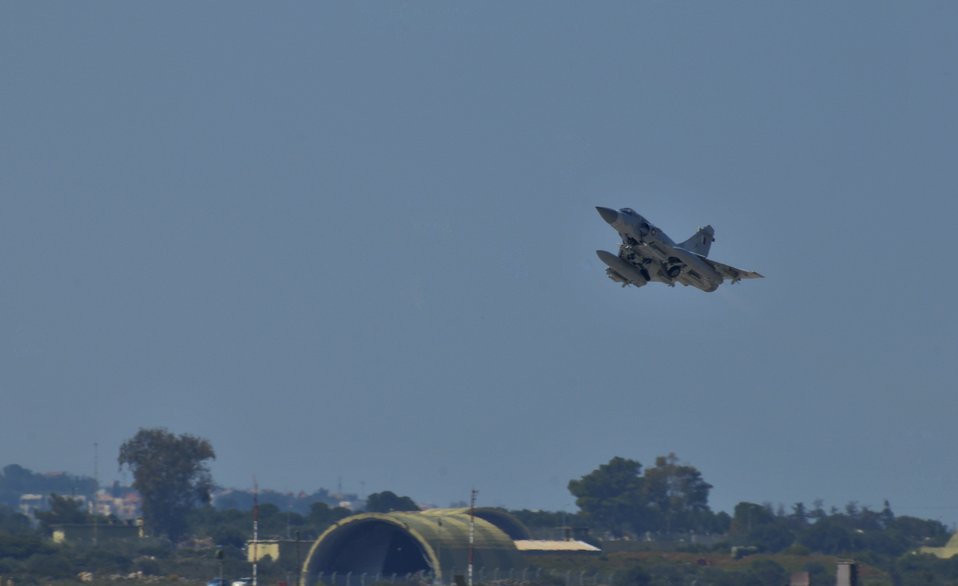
New coalition member flies Operation Odyssey Dawn mission

A Qatar Emiri Air Force Mirage 2000-5 takes off March 25, 2011, in support of a Joint Task Force Odyssey Dawn mission. Qatar is the newest member of the coalition supporting the no-fly zone over Libya.